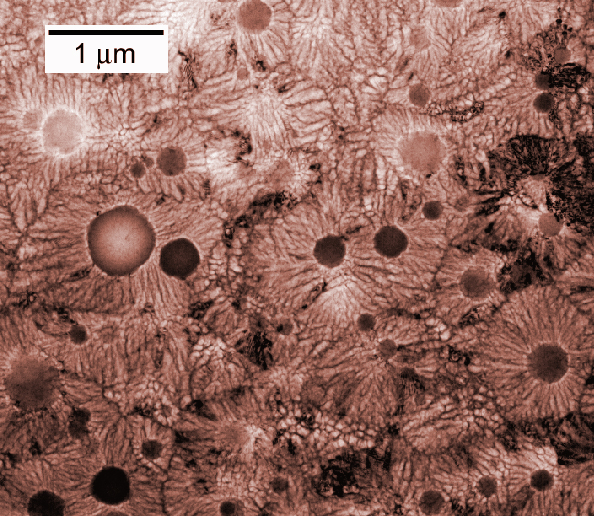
Q-Glass

The odd microstructure of this aluminum-iron-silicon mixture is seen in this image. The round nodules are the q-glass, not crystalline but with a well-defined chemical composition. The spherical shape indicates that they grow from an initial seed. The nodules use up iron and silicon in the mixture until the surrounding concentration of aluminum gets high enough to start forming aluminum crystals, seen as long bright lines radiating from the nodules. (Color added for clarity.)